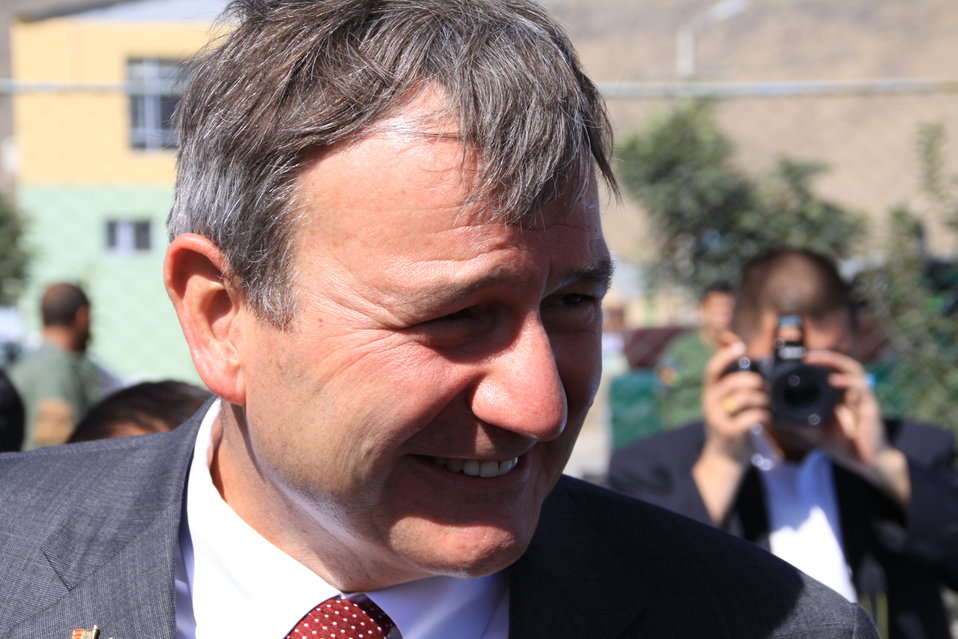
AVIPA Plus Wheat Seed Distribution 101005

US Ambassador Karl Eikenberry and USAID Acting Mission Director Kevin Brownawell joined the Minister of Agriculture, Irrigation and Livestock, H.E. Minister Mohammed Rahimi in signing a Memorandum of Understanding and distributing vouchers to area farmers for wheat and fertilizer.

US Ambassador Karl Eikenberry and USAID Acting Mission Director Kevin Brownawell joined the Minister of Agriculture, Irrigation and Livestock, H.E. Minister Mohammed Rahimi in signing a Memorandum of Understanding and distributing vouchers to area farmers for wheat and fertilizer.

US Ambassador Karl Eikenberry and USAID Acting Mission Director Kevin Brownawell joined the Minister of Agriculture, Irrigation and Livestock, H.E. Minister Mohammed Rahimi in signing a Memorandum of Understanding and distributing vouchers to area farmers for wheat and fertilizer.